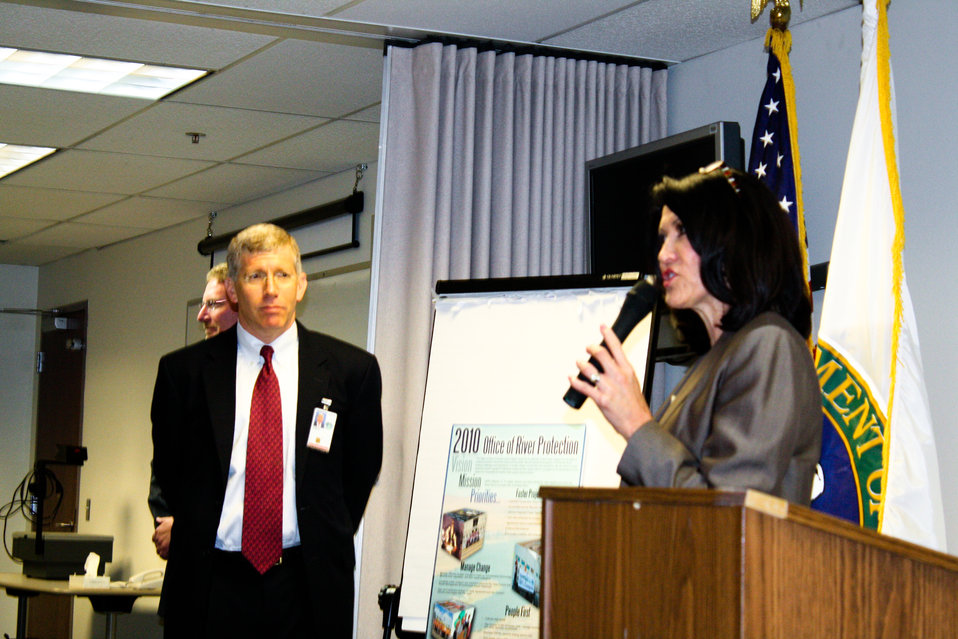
Poneman Vit Plant Visit 06-14-10